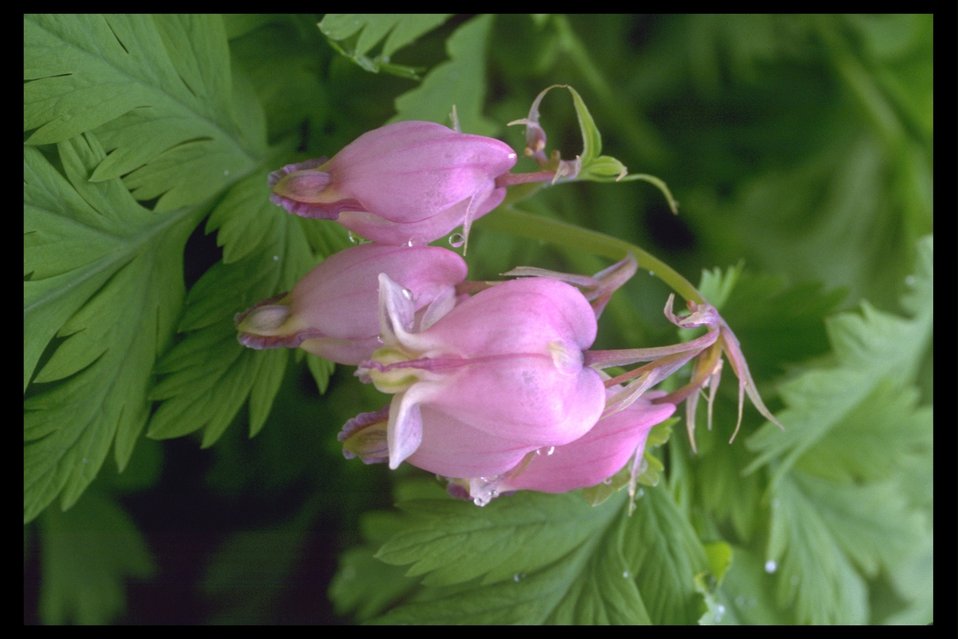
Bleeding Heart (Dicentra formosa) found near the Rogue River at Shady Cove.